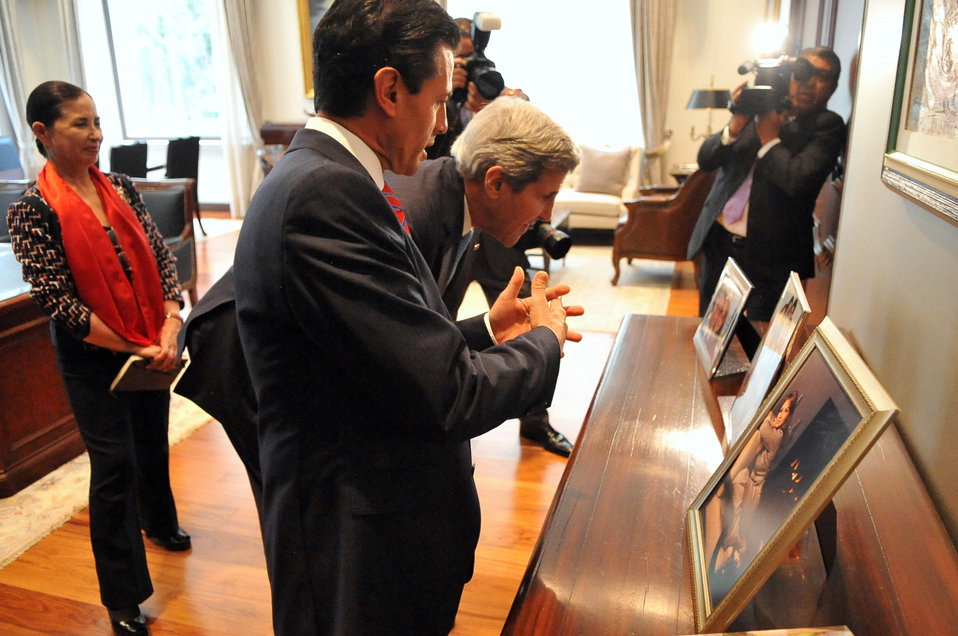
Mexican President Peña Nieto Shows Secretary Kerry Family Photo

Mexican President Enrique Peña Nieto shows U.S. Secretary of State John Kerry a photo of his family before a bilateral meeting at Los Pinos, the presidential residence and office compound, in Mexico City on May 21, 2014.